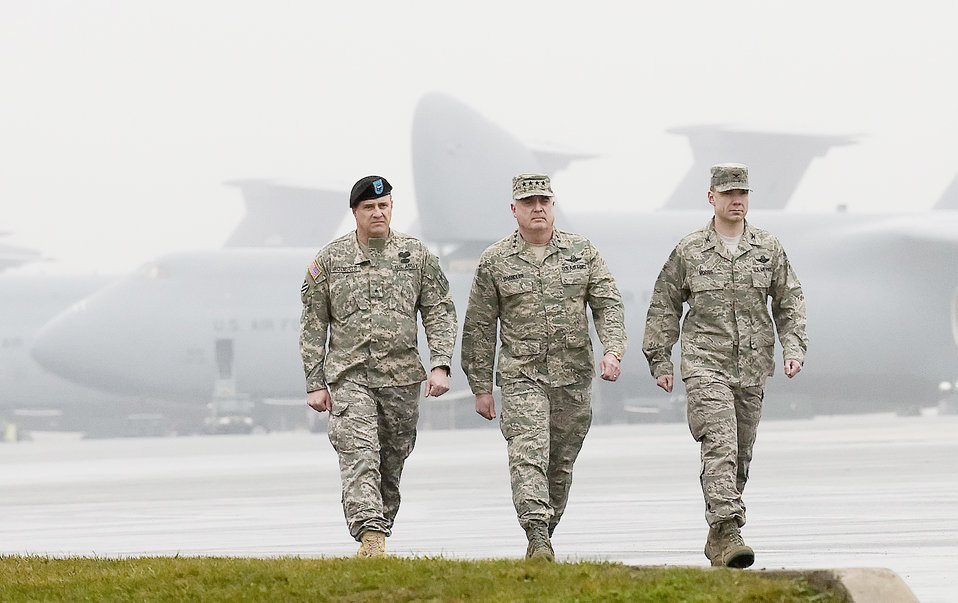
Dignified transfer

Brig. Gen. Kenneth Roberts (from left), special assistant for the director of the Army National Guard; Gen. Carrol H.